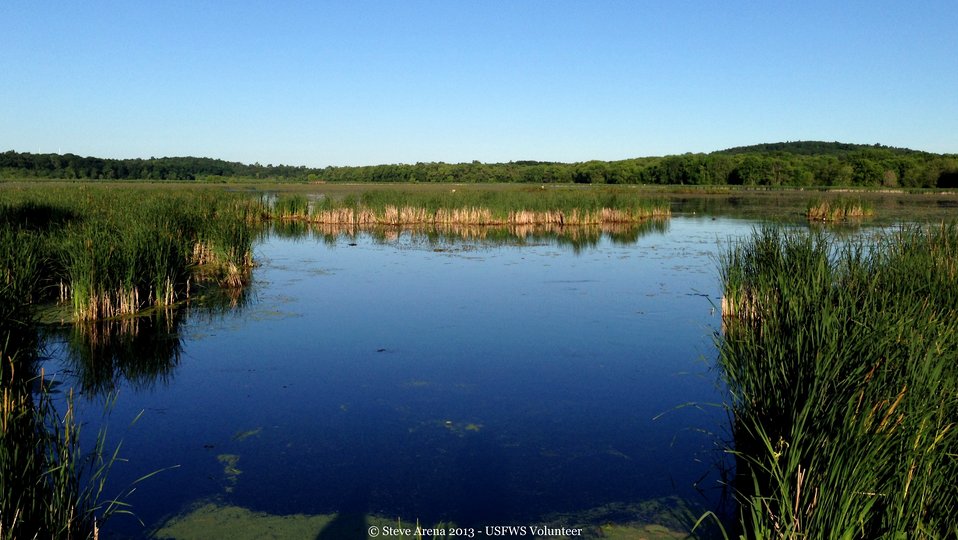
Lower Pool - Great Meadows NWR

Great Meadows National Wildlife Refuge, Concord, MA

Credit: Steve Arena/USFWS

09 June 2013